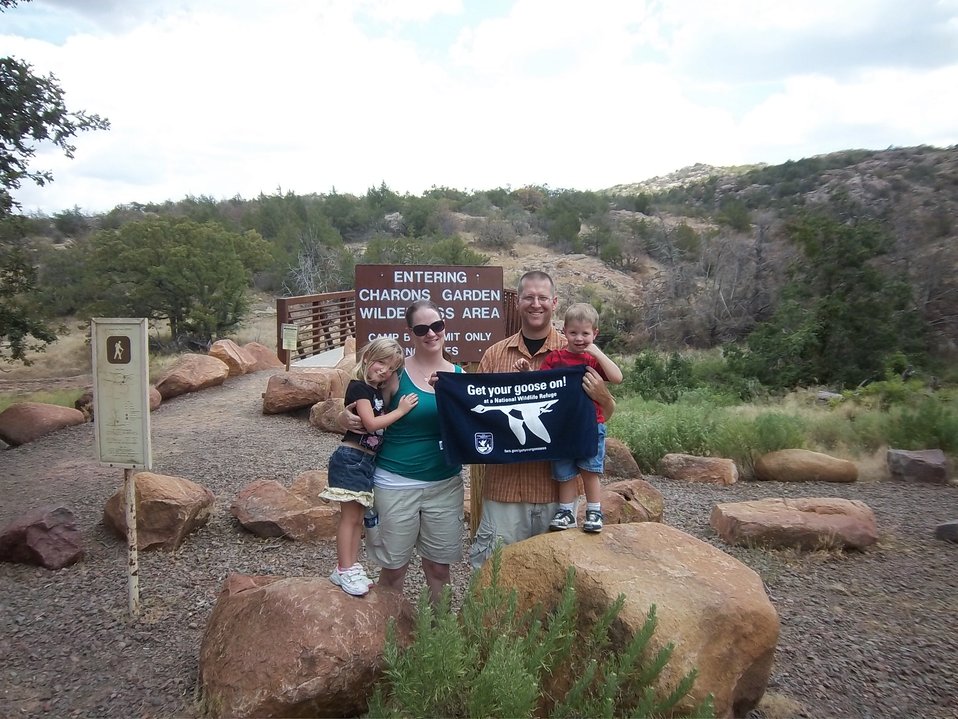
Get Your Goose On!

Wichita Mountains National Wildlife Refuge in Oklahoma.